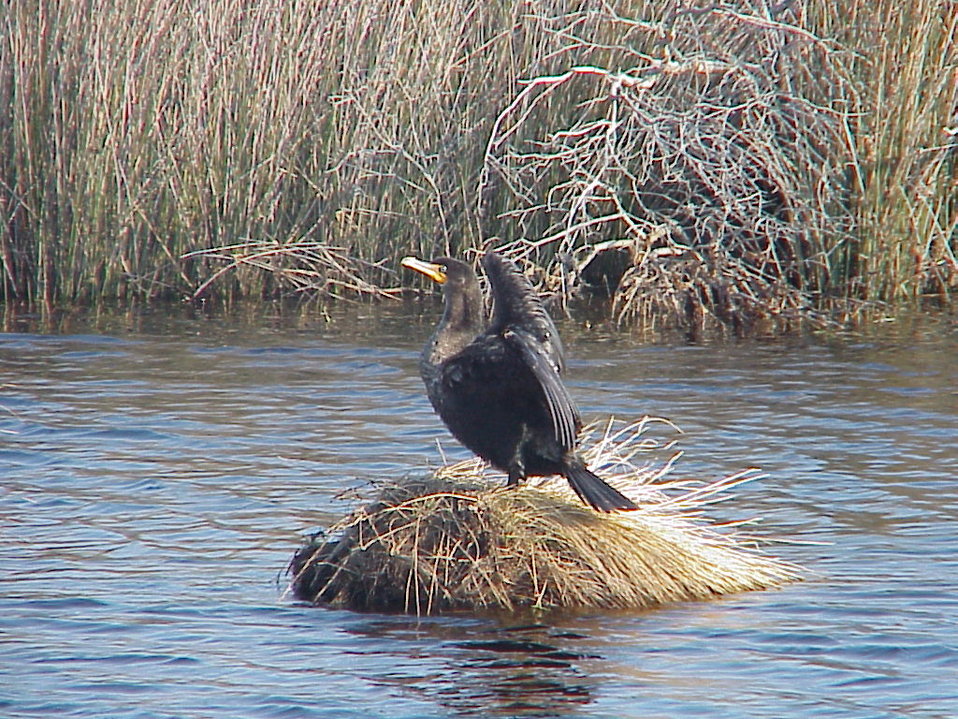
Double-crested cormorant at Back Bay National Wildlife Refuge in Virginia.